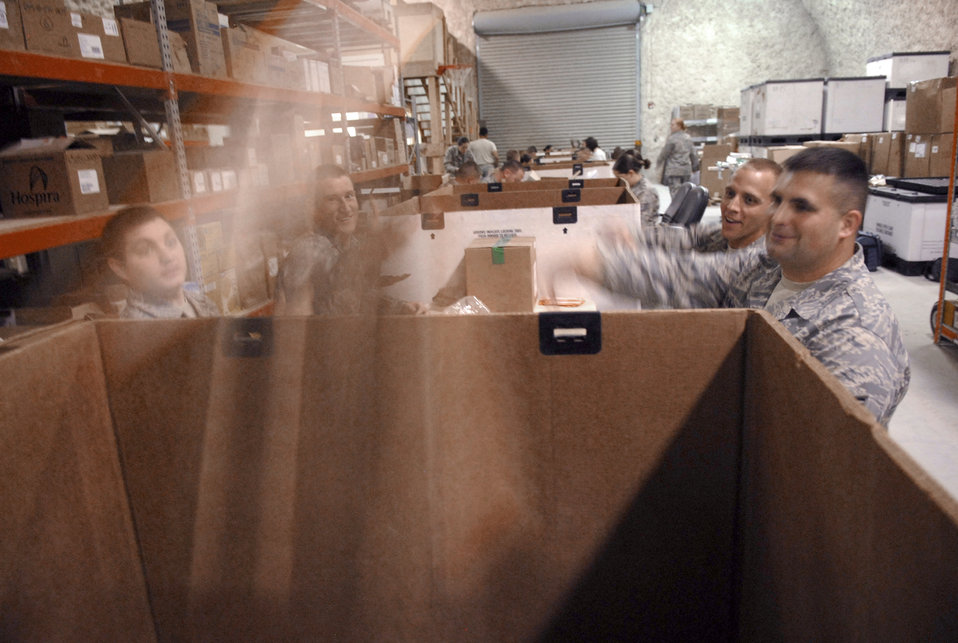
Pitching in

Senior Airman Jonathan Bose, Senior Airman Nathaniel Hildreth, Staff Sgt. William Powell and Staff Sgt. Brandon Elkins toss completed individual first aid kits they assembled into a bin April 9 at an air base in Southwest Asia. The volunteers put in checked for anything out of date to ensure the kits being distributed to personnel downrange are effective. Airman Hildreth hails from Cincinnati, and is deployed from Ramstein Air Base, Germany. Sergeant Powell hails from Ridgeland, Miss., and is deployed from McChord Air Force Base, Wash. Sergeant Elkins hails from Norwalk, Wis., and is deployed from Tyndall AFB, Fla. Airman Bose hails from Terre Haute, Ind., and is deployed from the Hulman Field, Ind. All are from the 379th Expeditionary Communications Squadron.